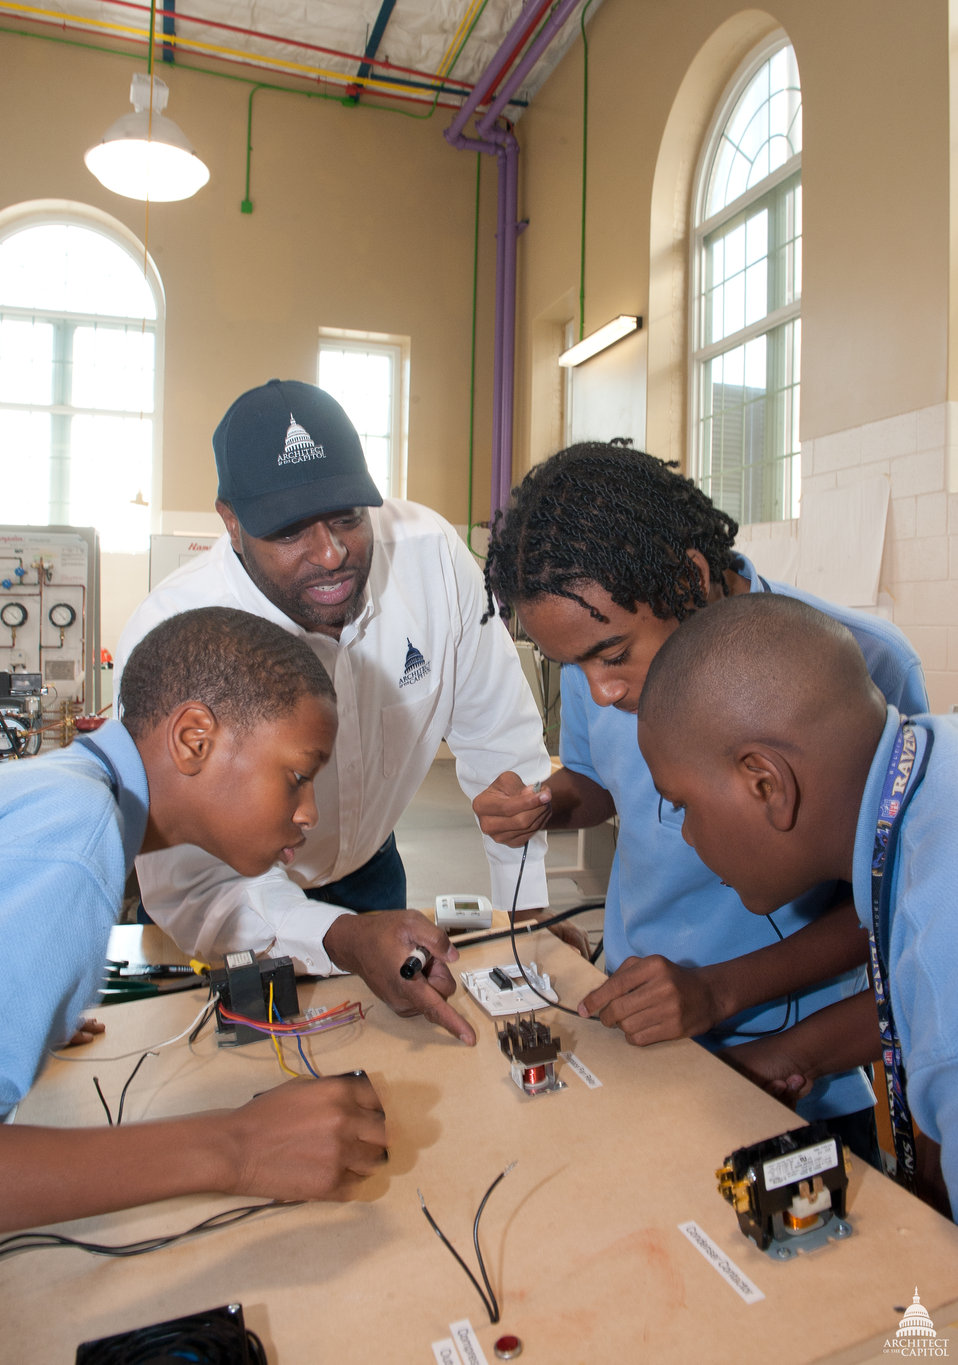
AOC Employee teaches high school students about electrical circuits

Currently 28 AOC employees teach 15 short courses at Phelps Architecture, Construction and Engineering High School in Northeast Washington, D.C.